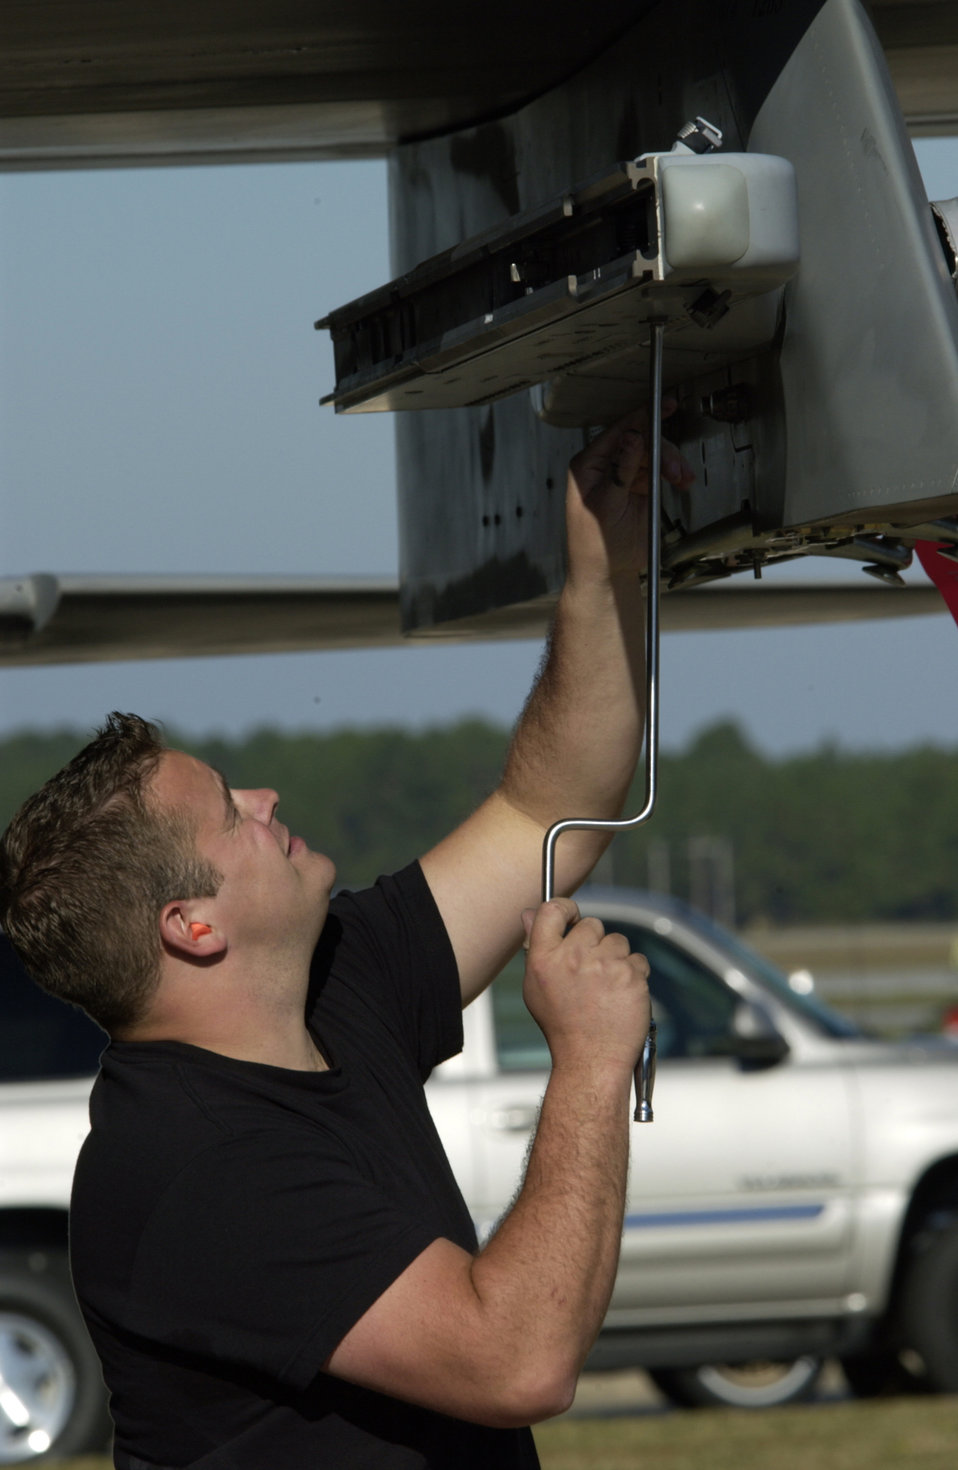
William Tell 2004

TYNDALL AIR FORCE BASE, Fla. - Staff Sgt. Jason Phillips prepares his F-15C for a missile load during the timed weapons load portion of William Tell 2004 here Nov. 8. This is the 50th anniversary of the William Tell Competition, which tests an aircrew's ability to perform in a combat environment. Sergeant Phillips is assigned to the Oregon Air National Guard's 123rd Fighter Squadron.